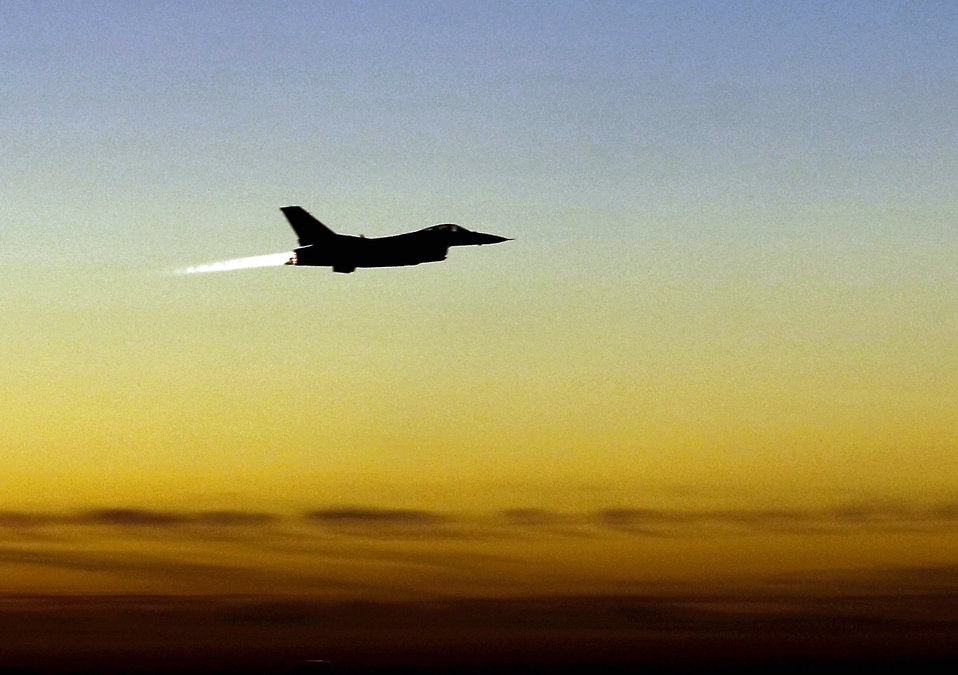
When the sun goes down, Balad heats up

An F-16 Fighting Falcon with the 55th Expeditionary Fighter Squadron takes off on a combat mission just after sunset Dec. 18 from Joint Base Balad, Iraq. The 332nd Air Expeditionary Wing at Balad is the most forward-deployed Air Force wing participating in Operation Iraqi Freedom, and its heritage is tied to the famous 332nd Fighter Group